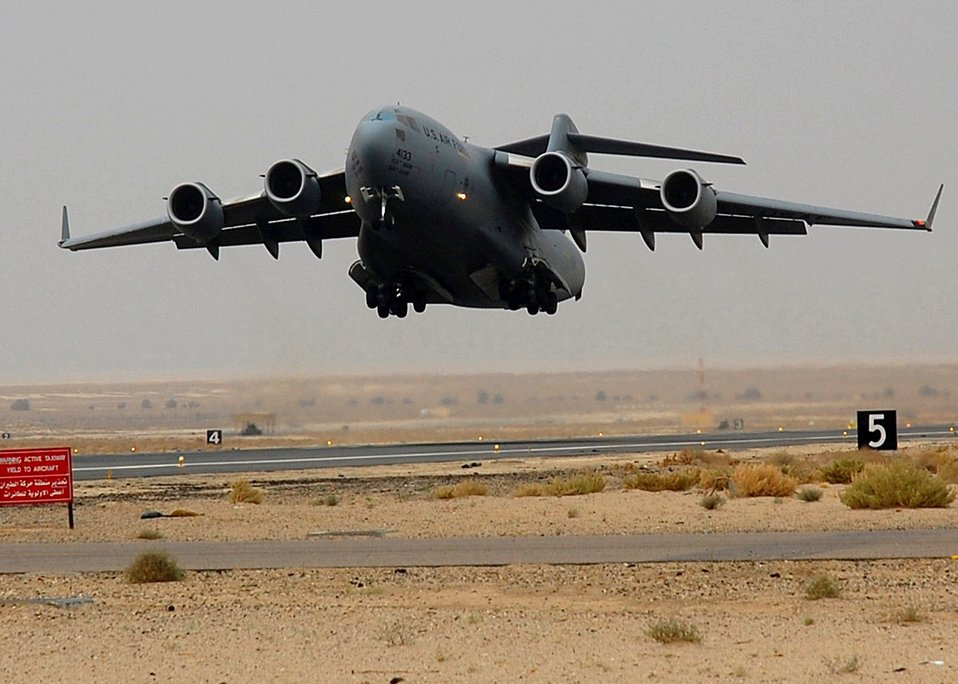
Airpower summary for Dec. 11, 2007

A C-17 Globemaster III takes off from an air base in Southwest Asia. The C-17's primary mission is to transport servicemembers and cargo throughout the Middle East in support of operations Enduring Freedom and Iraqi Freedom.